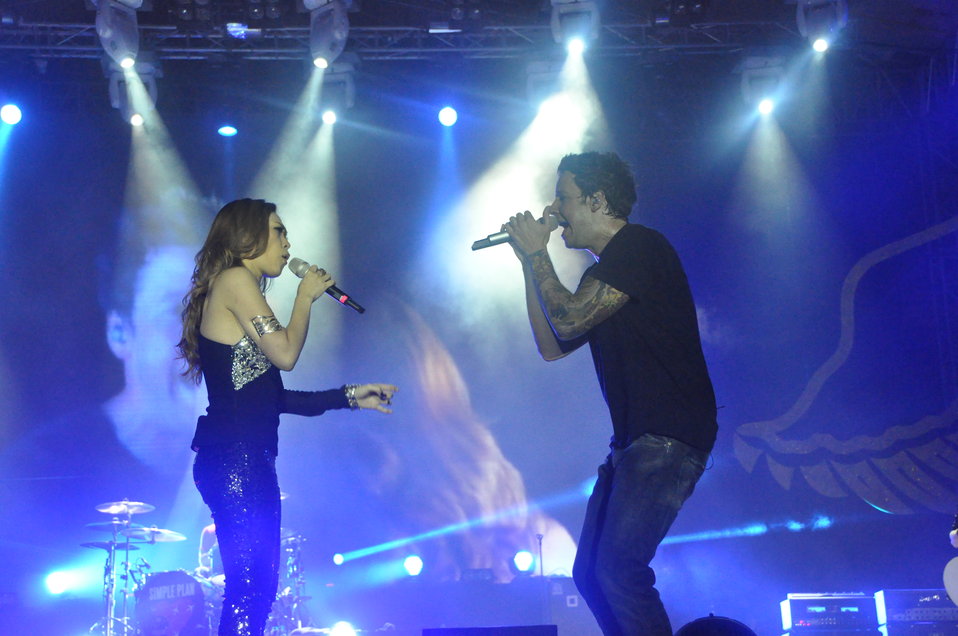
My Tam joins Simple Plan at MTV EXIT concert in Hanoi against human trafficking

USAID co-sponsors MTV EXIT concert, campaign against human trafficking